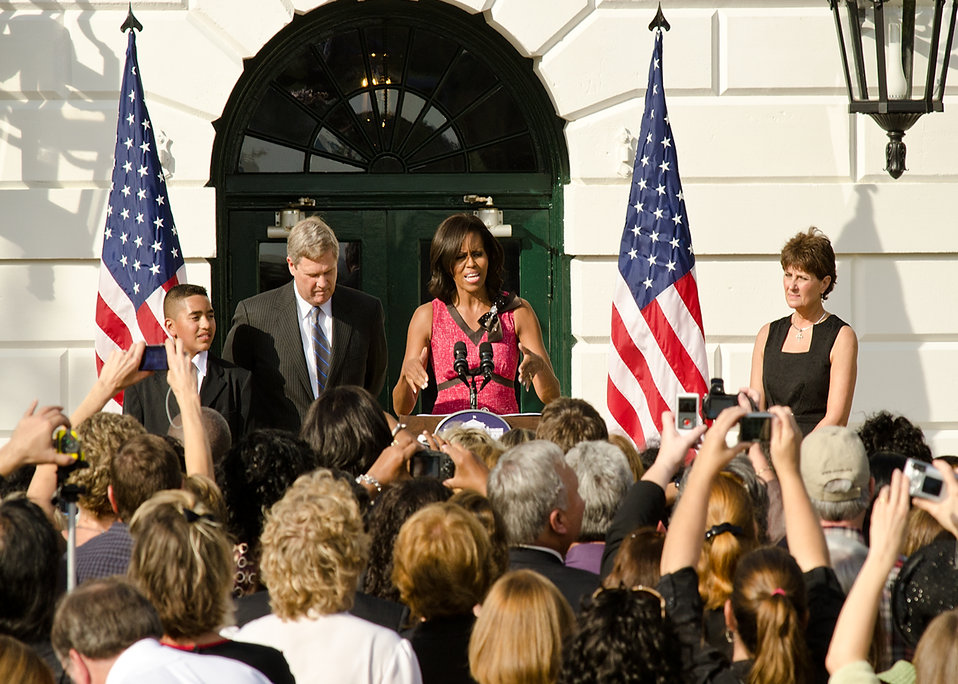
From left: Alex Roman, Walsh Elementary School, Chicago, Illinois, Agriculture Secretary Tom Vilsack, First Lady Michelle Obama and Becky Bounds, Lamar County Schools, Mississippi. Agriculture Secretary Tom Vilsack and First Lady Michelle Obama hosted a reception on the South Lawn of the White House in Washington, DC, Monday, October 17, 2011 to honor the over 1200 winners in the HealthierUS Schools Challenge that met the First Lady’s goal to double the number of participants in the HealthierUS School Challenge in a year. In February 2010, First Lady Michelle Obama introduced “Let’s Move” incorporating the HealthierUS School Challenge into her campaign to promote a healthier generation of children. The HealthierUS School Challenge recognizes elementary, middle and high schools nationwide that create healthier school environments by providing exceptional nutrition education, nutritious food and beverage choices, physical education and opportunities for physical activity. Since the beginning of the HealthierUS School Challenge in 2004, awards have been given to schools in 44 states. As of September 28, 2011, there are 1631 schools certified. A tool kit on how to become a Healthier U.S. School can be found at www.fns.gov.